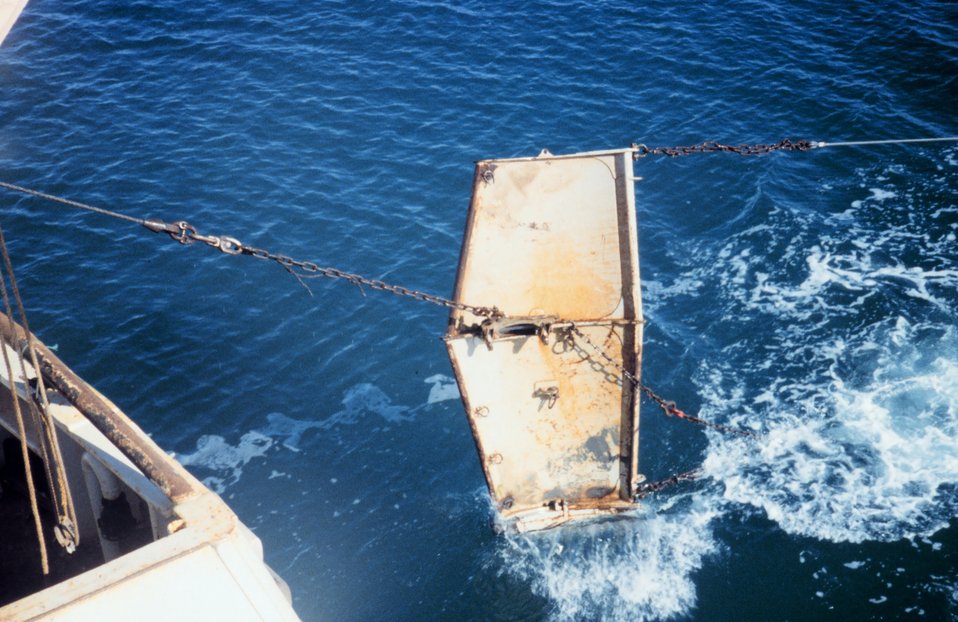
Photo # 5 - 'Shooting the doors'. The 'doors' help pull the net down and also spread open the mouth of the net.